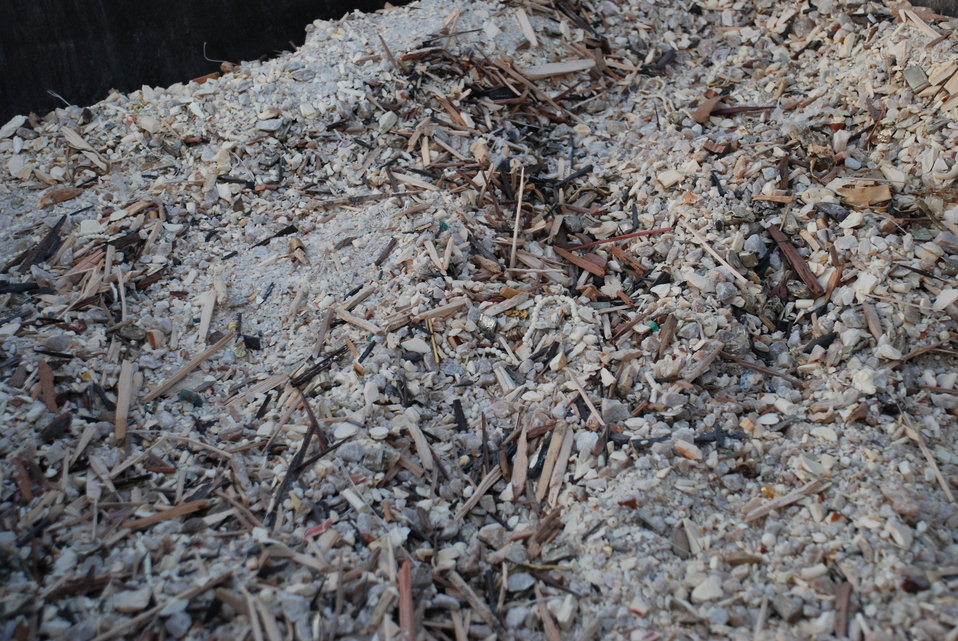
Ivory Crush 2013